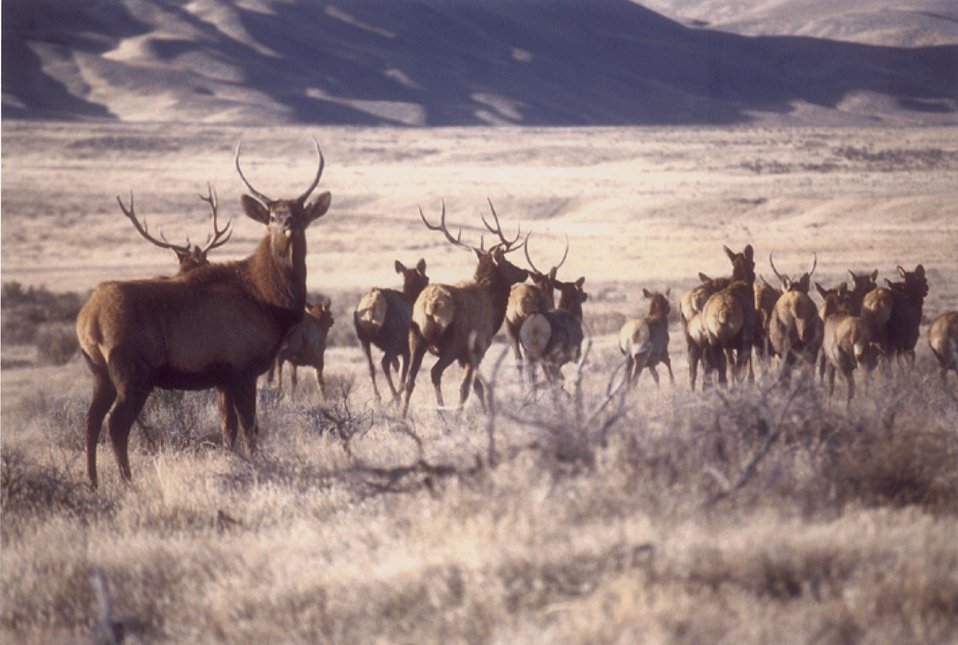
Elk at the Hanford Site.